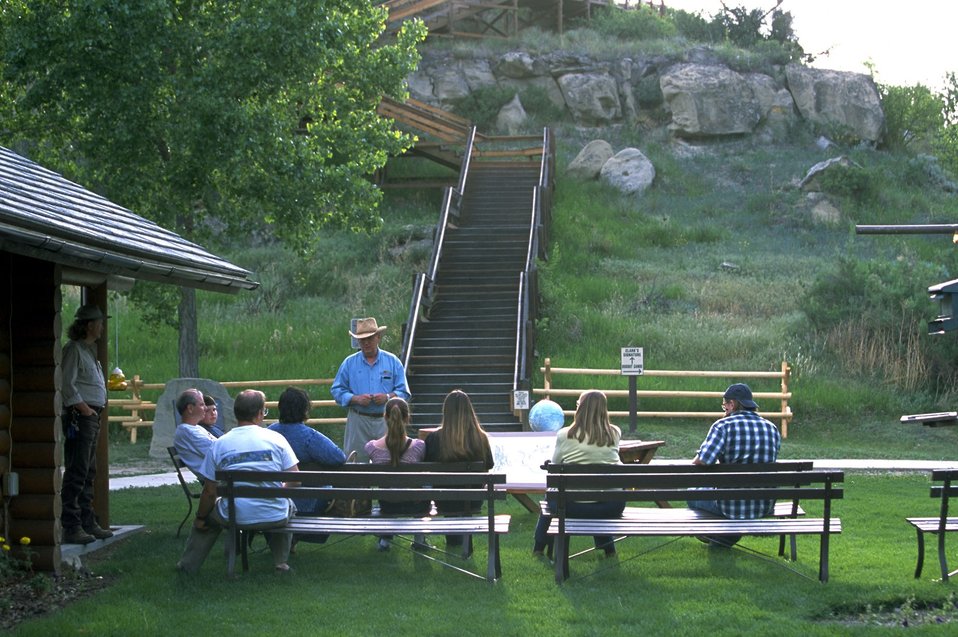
The back lawn area of Pompeys Pillar Visitor Center. Interpretative program is in progress on mapping by Captain William Clark - presented by John Levar